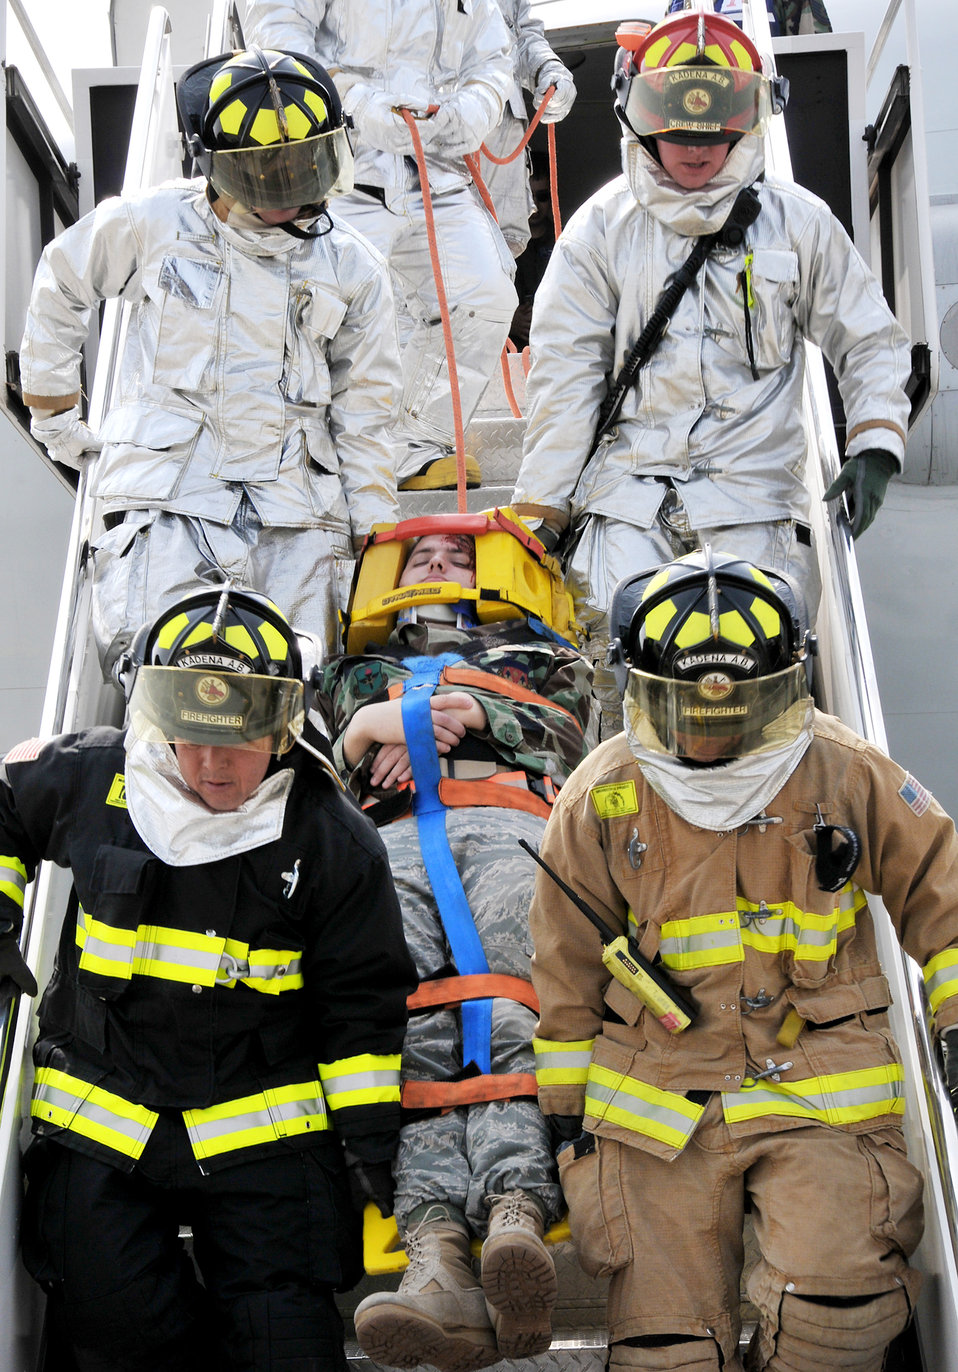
Kadena Airmen test readines during exercise

The Kadena Fire Department staff extract an injured victim during a simulation involving a 961st Airborne Warning and Control System E-3 Sentry engine fire during a base exercise March 23, 2010, at Kadena Air Base, Japan. The 18th Wing participated in a local operational readiness exercise to test base Airmen's ability to defend Japan and maintain peace and stability in the Pacific region.